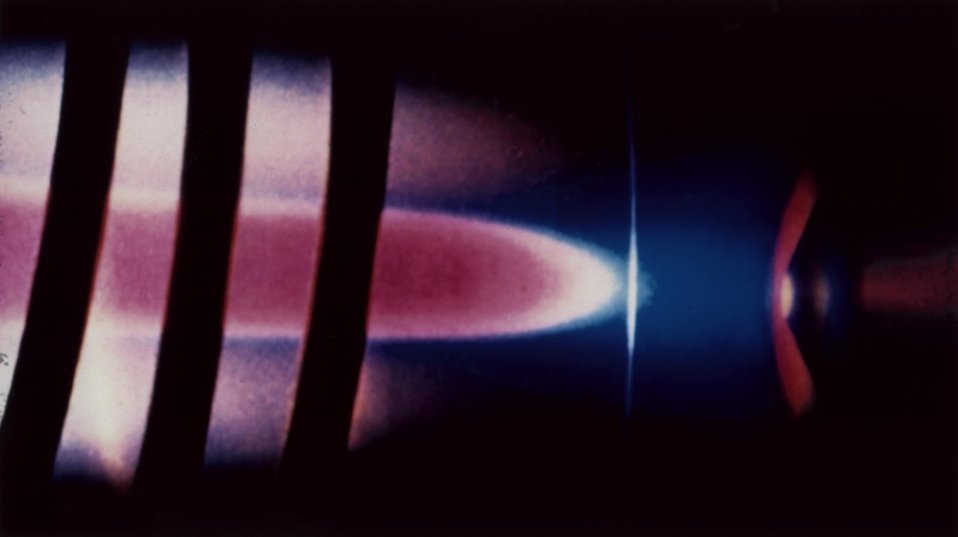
EMISSION FROM THE HOT ARGON INDUCTIVELY COUPLED PLASMA.
AMES SCIENTISTS DEVELOPED AN INNOVATIVE TECHNIQUE THAT COMBINES INDUCTIVELY COUPLED PLASMA-MASS SPECTROMETRY WITH CHROMATOGRAPHY TO IDENTIFY ULTRATRACE METALS IN BIOLOGICAL SYSTEMS AT PARTS PER TRILLION LEVELS. ALLOWING MEASUREMENTS AT PARTS PER TRILLION LEVELS, THE ICP-MS TECHNIQUE RELIES ON A SPECIAL TYPE OF CHROMATOGRAPHIC SEPARATION CALLED SIZE EXCLUSION CHROMATOGRAPHY IN CONNECTION WITH A STATE OF THE ART MAGNETIC SECTOR MASS SPECTROMETER AND AN INDUCTIVELY COUPLED PLASMA, A VERY HOT ARGON GAS.